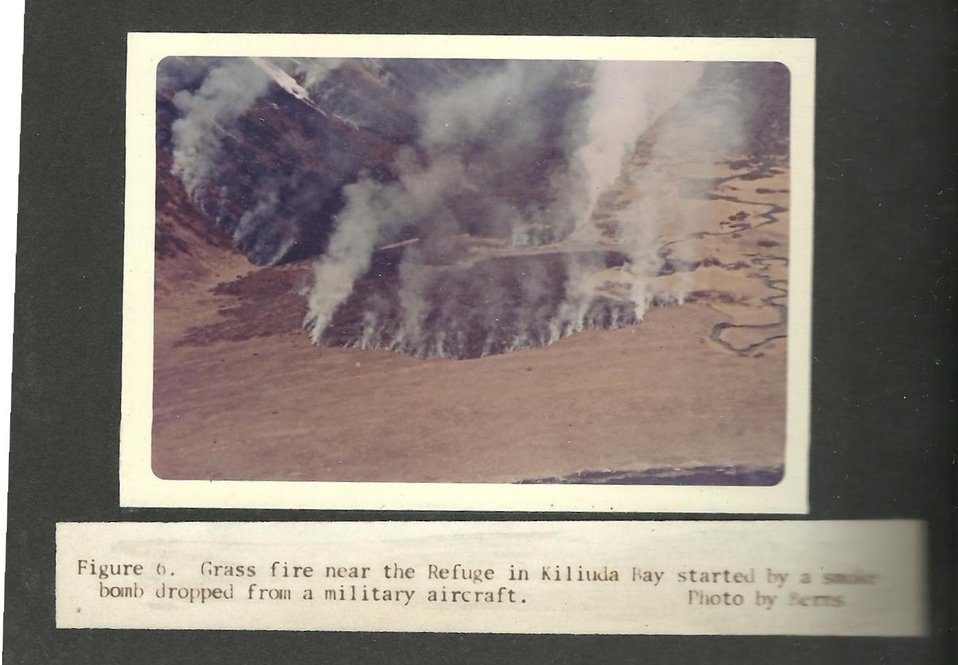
(1965) Grass Fire

Credit: USFWS

Source and Contact: Kodiak National Wildlife Refuge